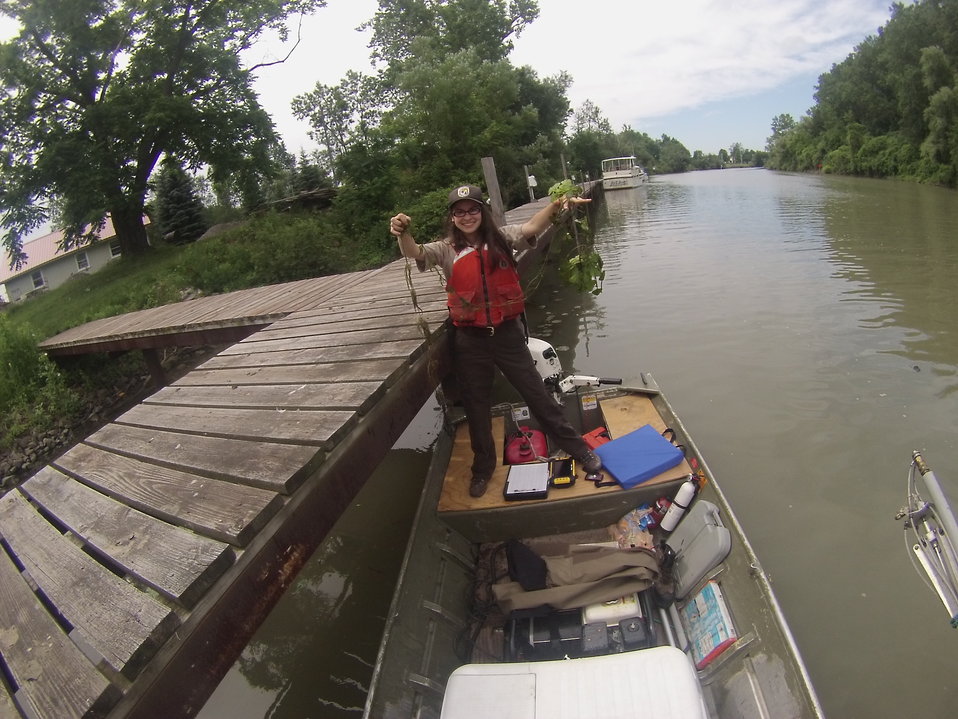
Quickly growing!

Technician Kelly McDonald holds up a small Waterchestnut plant to show how big they can grow in just a few weeks. Waterchestnut plants can grow to over 16 feet long!